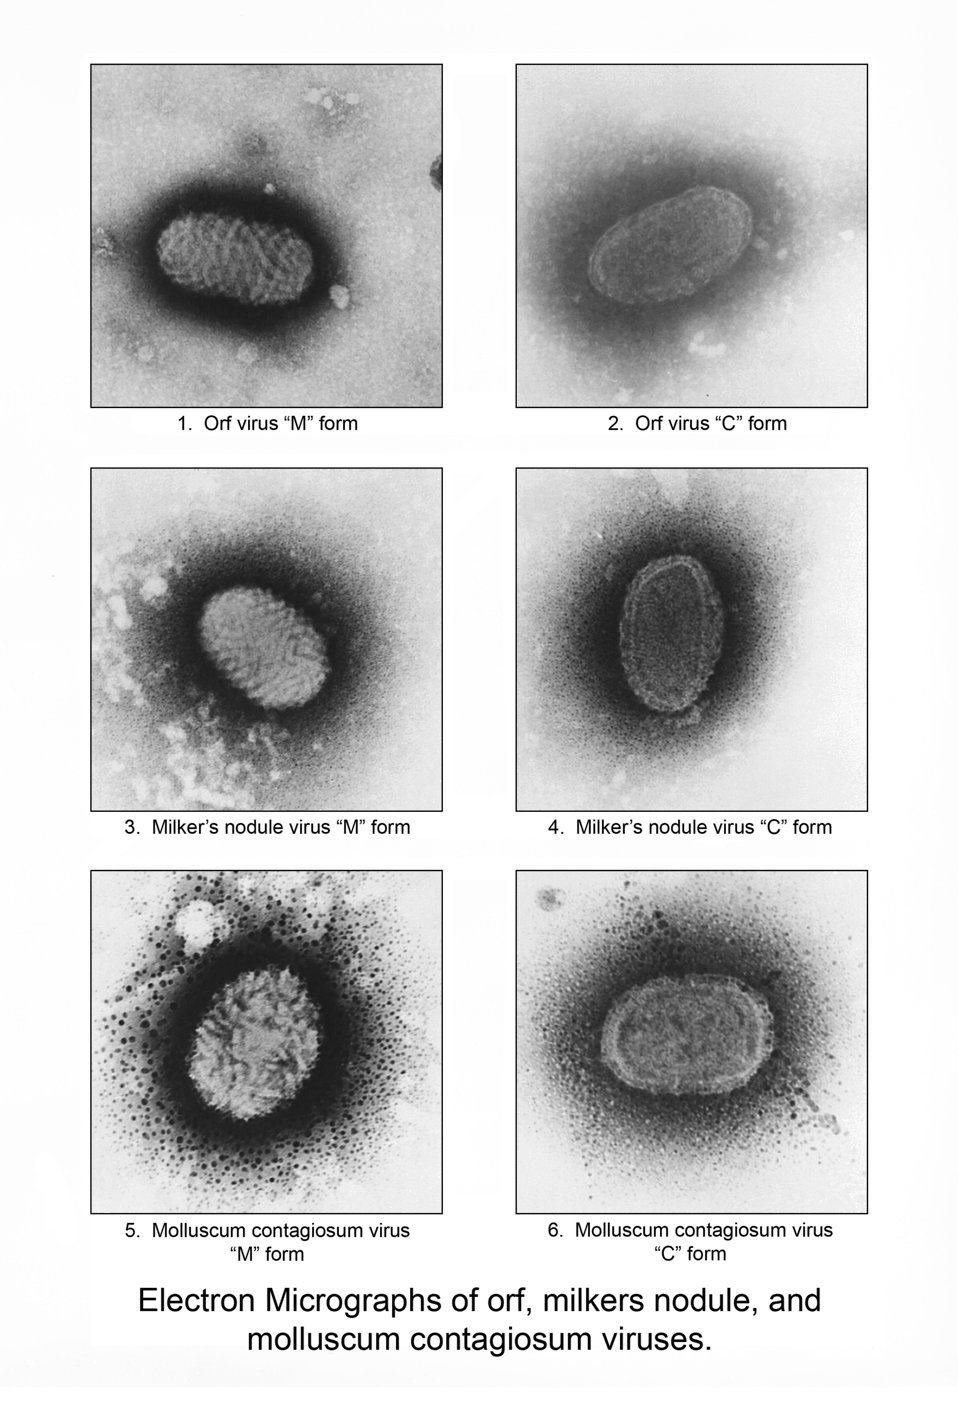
This image compares the morphologic details exhibited by forms 'M' and 'C' of the Orf virus, forms 'M' and 'C' of the milker's nodule virus, and forms 'M' and 'C' of the molluscum contagiousum virus. All three of these viruses are members of the family, Poxviridae, which also contains the genus Orthopoxviridae, i.e., vaccinia, smallpox, and cowpox. All contain a genomic core of DNA.